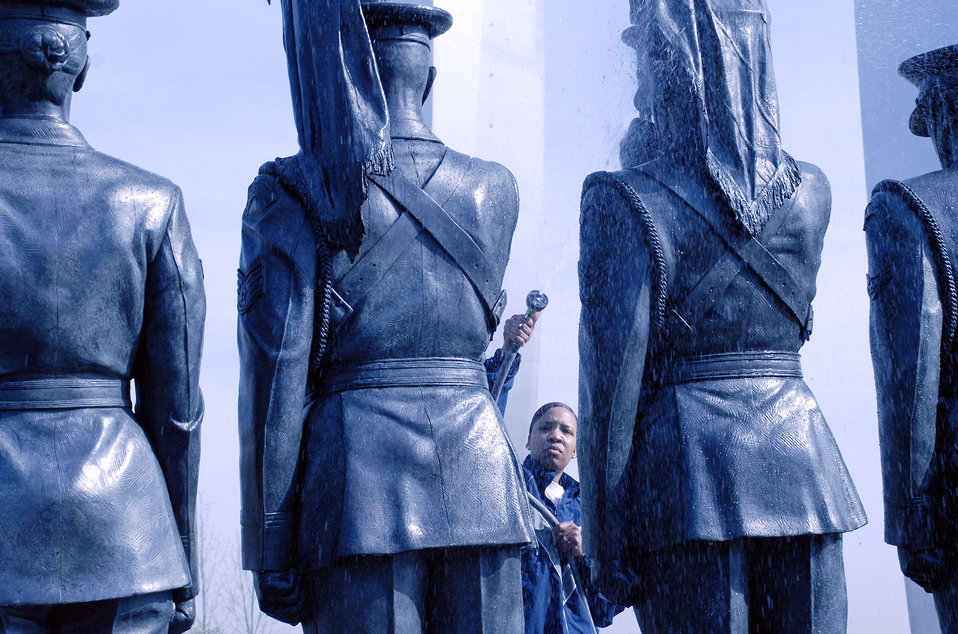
Sprucing up the Air Force Memorial

Staff Sgt. Shannah Holmes hoses down a bronze honor guard statue during a work party April 19 at the Air Force Memorial. More than 50 volunteers from Air Force Sergeants Association Chapter 300 in Washington D.C. gathered to help spruce up the site. Dedicated on Oct., 14, 2006, the memorial honors the service and sacrifice of the men and women of the United States Air Force and its predecessor organizations. The wall bears the inscriptions of combat campaigns and expeditionary operations and contains the words of Air Force leaders that relate to the service's core values of Integrity First, Service Before Self and Excellence in All We Do. The memorial is located just outside the nation's capital in Arlington, Va., adjacent to Arlington National Cemetery and overlooking the Pentagon. Sergeant Holmes works in the Pentagon in the Secretary of the Air Force Financial Management and Comptroller's Office.